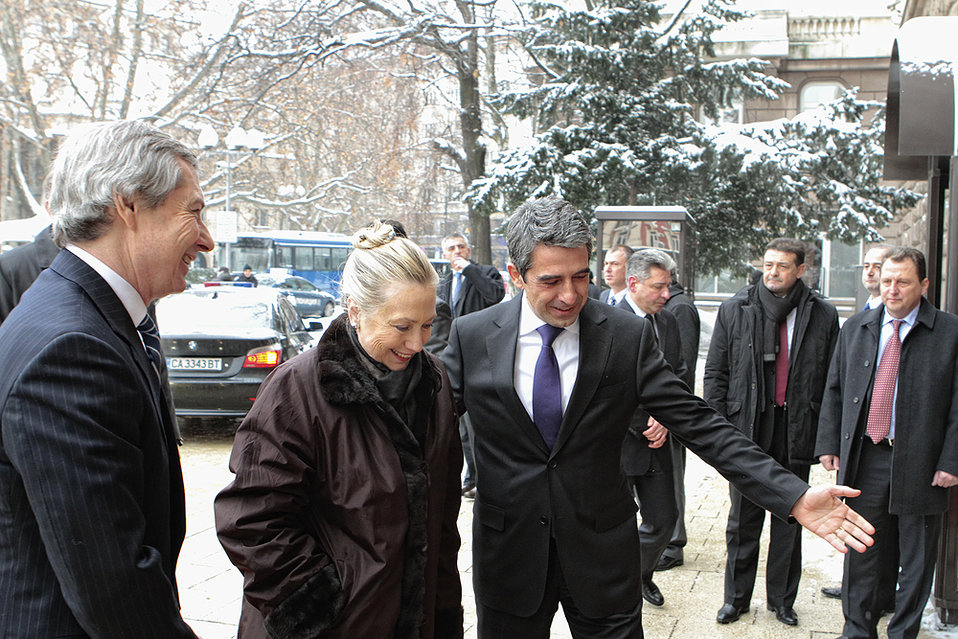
Secretary Clinton Is Welcomed By Bulgarian President Plevneliev

U.S. Secretary of State Hillary Rodham Clinton is welcomed by Bulgarian President Rosen Plevneliev at the Bulgarian Presidency building in Sofia, Bulgaria, on February 5, 2012.